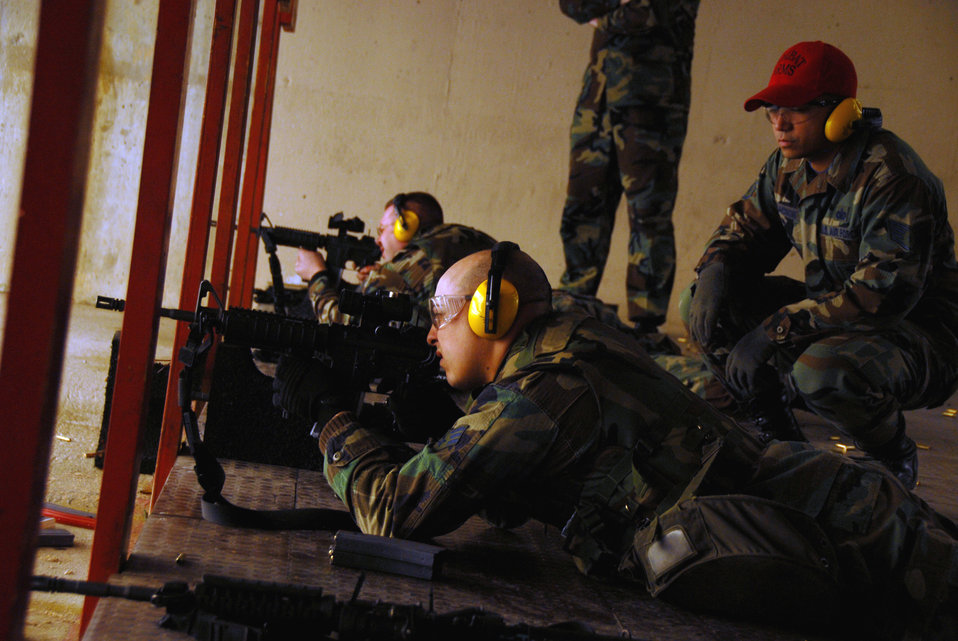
Keep firing

Airmen test their skills at the Osan Air Base, South Korea, shooting range March 15. .